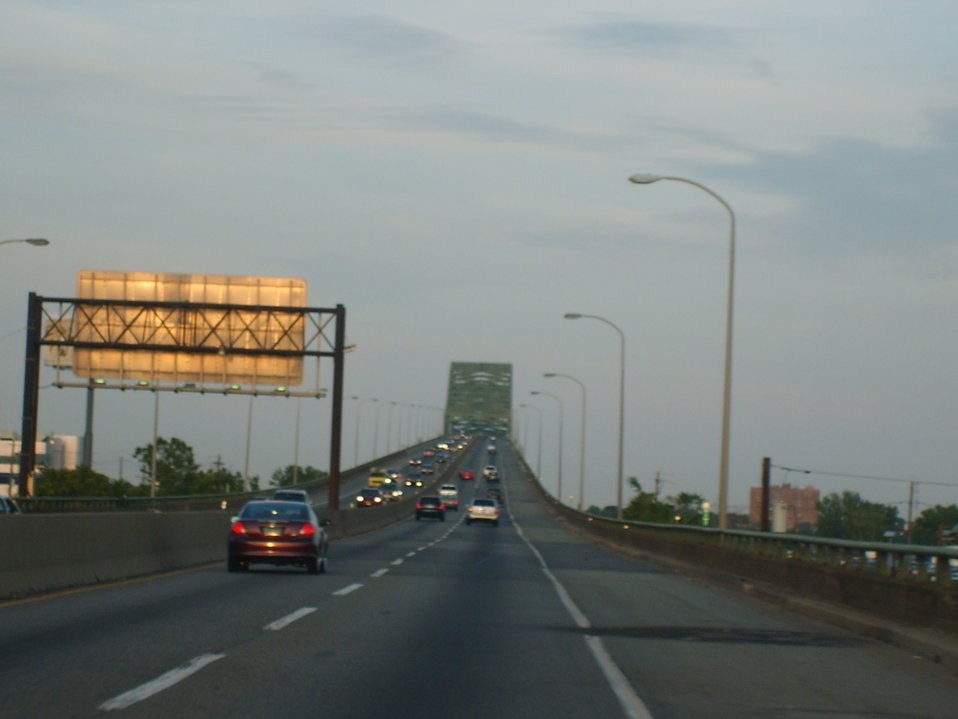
I took this myself while driving Eastbound on 1-78/New Jersey Turnpike Extenstion towards Bayonne and Jersey City.